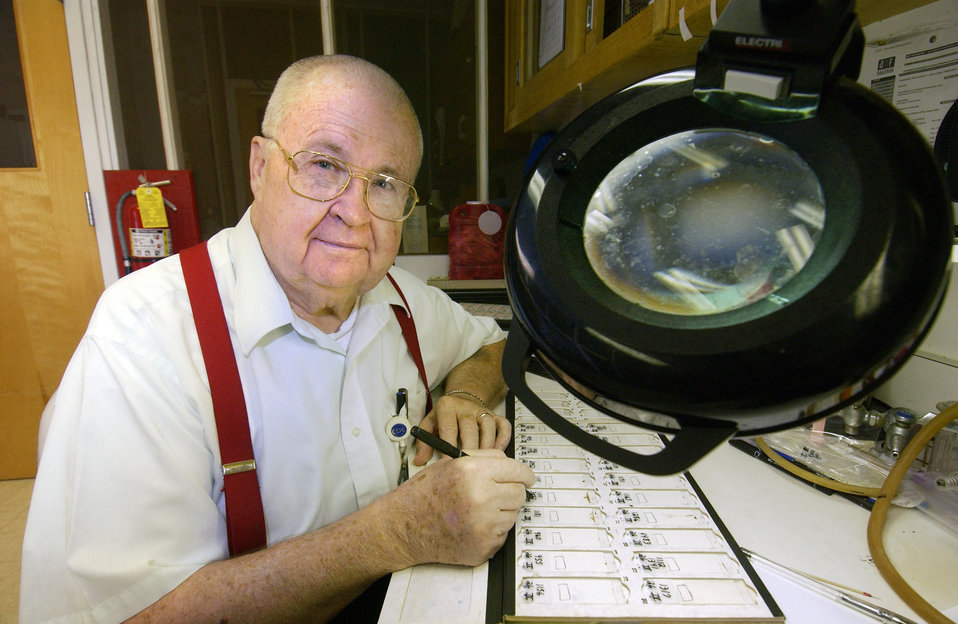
This 2004 photograph showed Dr. William 'Bill' Collins, a research biologist with the National Center for Infectious Diseases (NCID), Division of Parasitic Diseases (DPD).